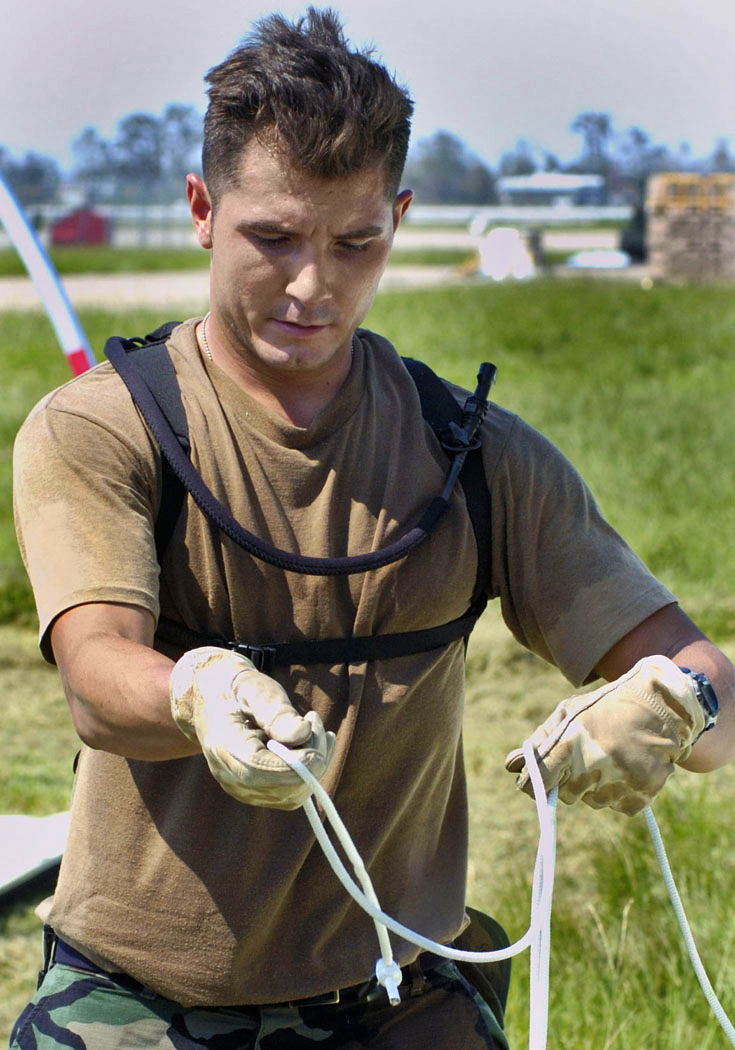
tent city

NEW ORLEANS -- Senior Airman Robbie Don helps erect tents at Louis Armstrong International Airport here Sept. 4. The tents were flown in from the 49th Materiel Maintenance Group at Holloman Air Force Base, N.M., to house workers supporting the Hurricane Katrina relief effort. Airman Don is with the 55th Services Squadron, Offutt Air Force Base, Neb.